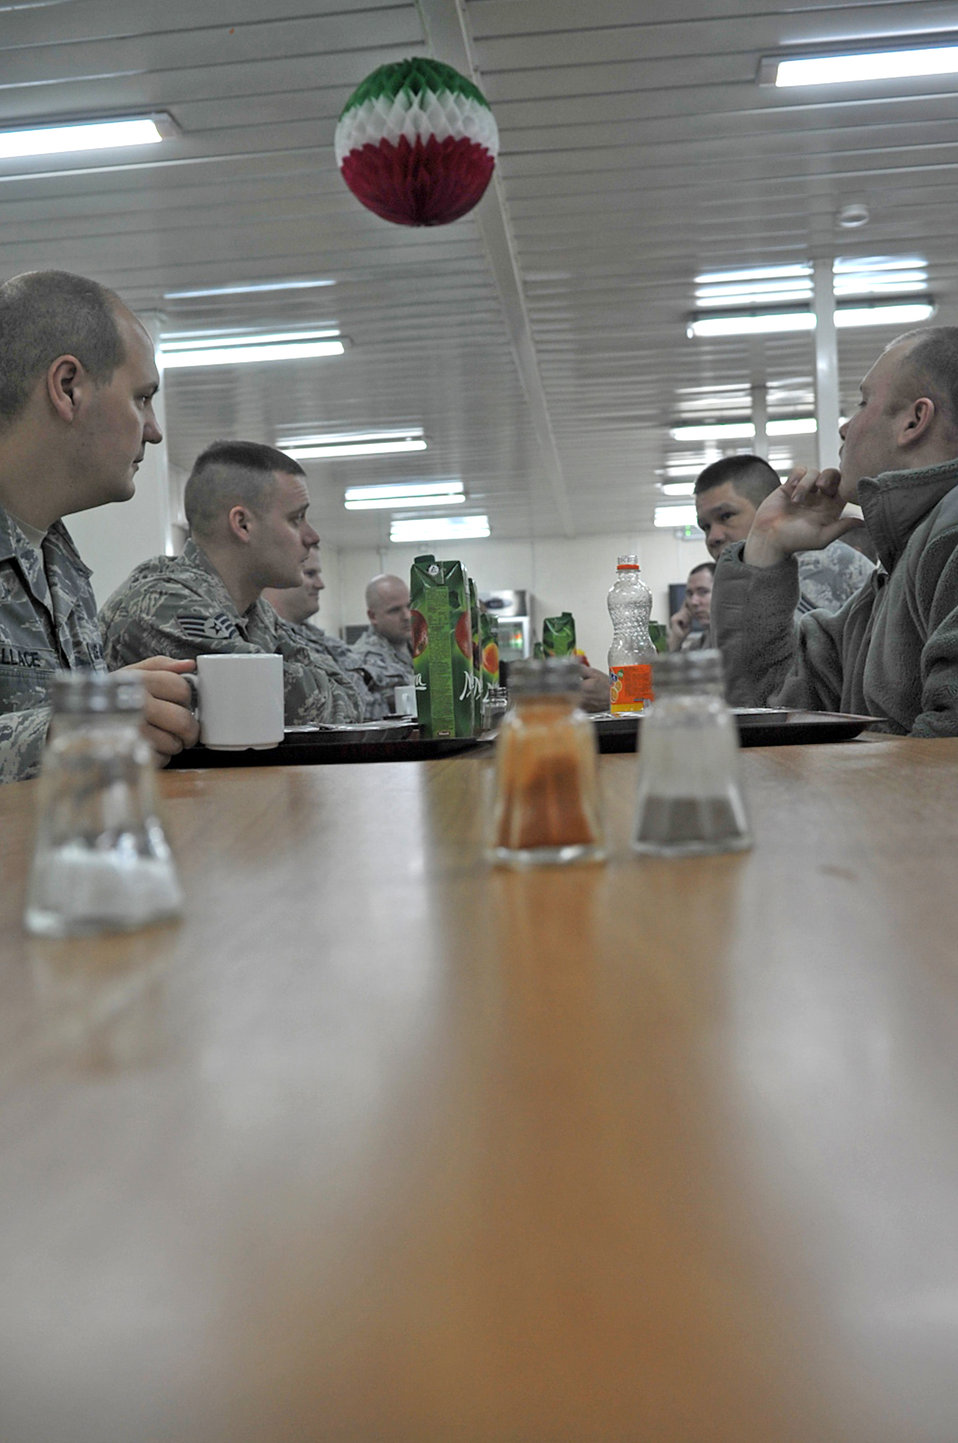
Combat Comm provides vital 'link' to Marines in Georgia

Airmen from the 1st Combat Communications Squadron at Ramstein Air Base sit down to breakfast at the start of their day Feb. 9, 2010, at the Krtsanisi National Training Center,Republic of Georgia.